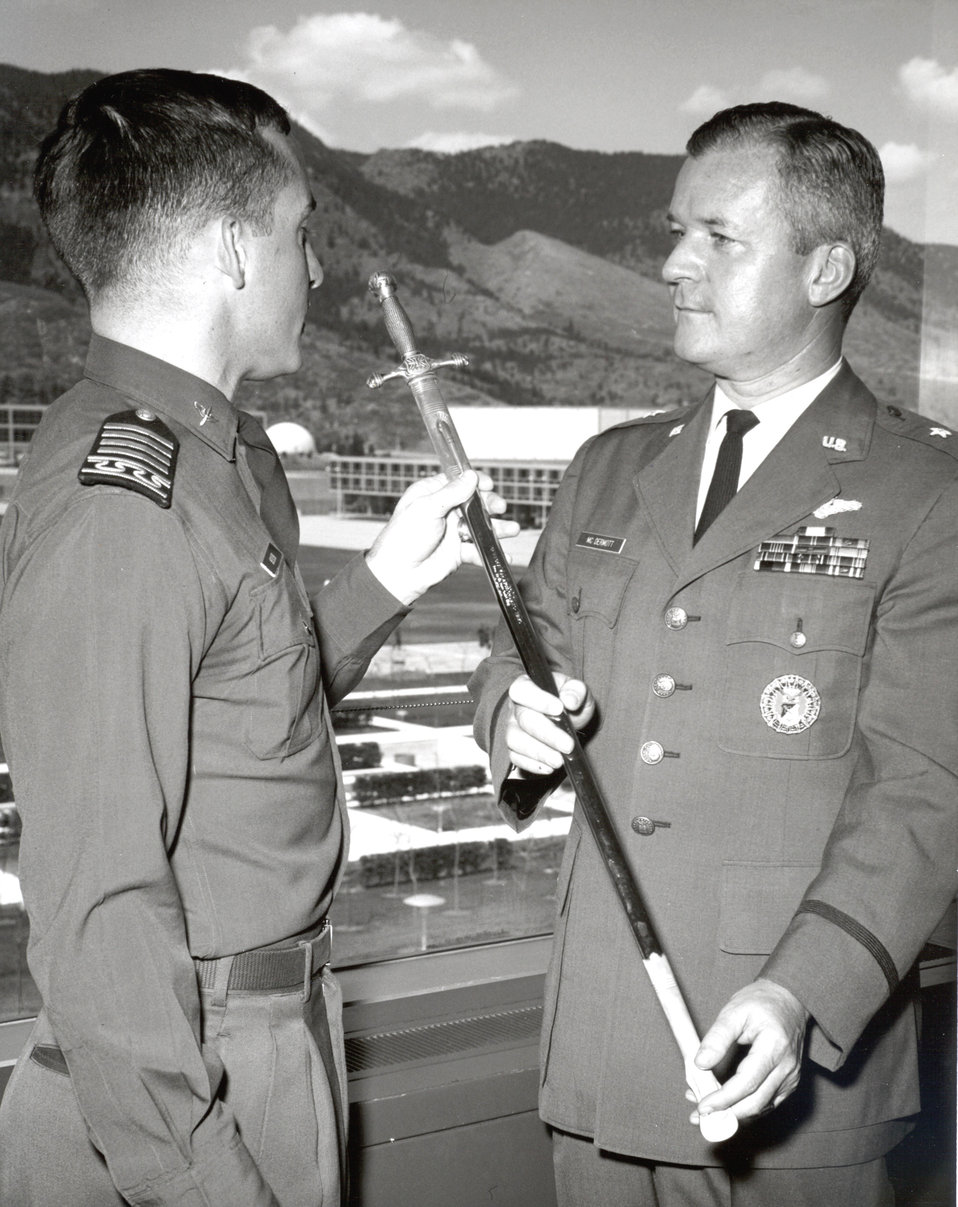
Air Force legend passes away at 86

Brig. Gen. Robert F. McDermott receives an inscribed cadet saber from Cadet Wing Commander Jerrold Allen, April 28, 1966, in recognition of his pioneering innovations in the field of service academy education.